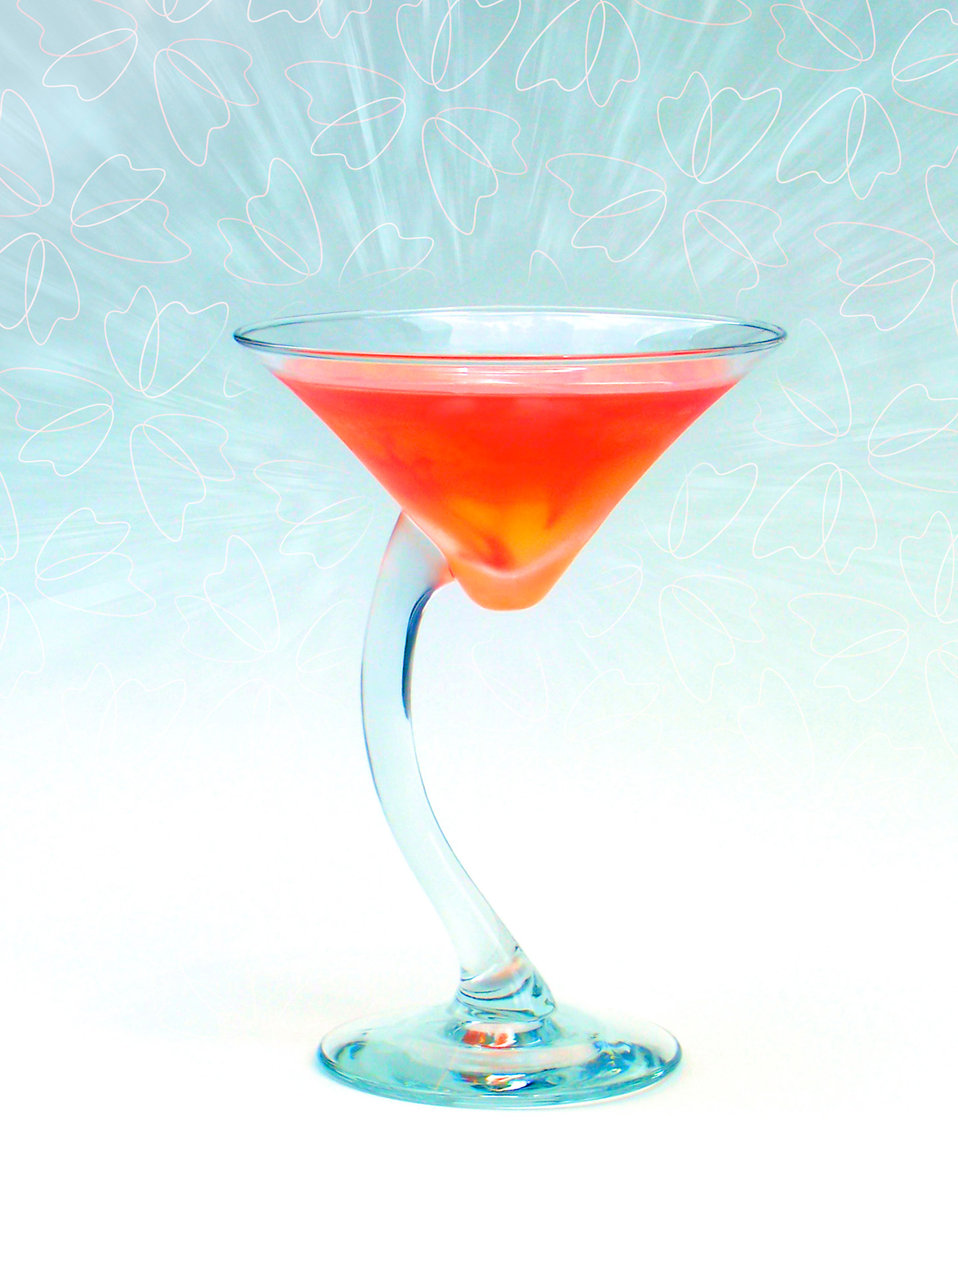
Martini with a retro background.